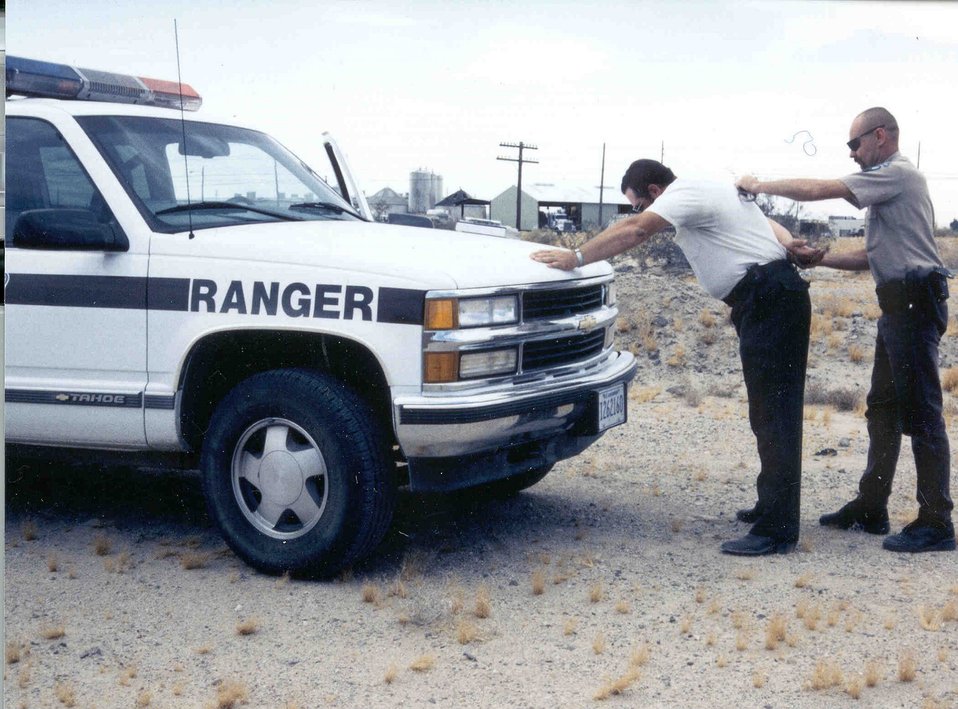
Law Enforcement Ranger arresting a member of the public.